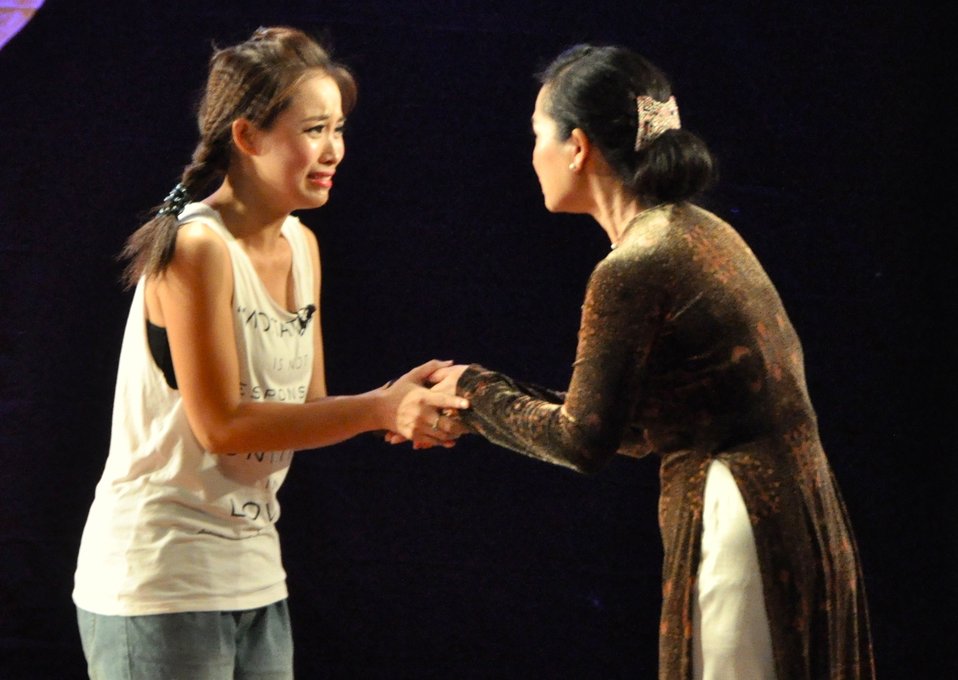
PEPFAR Musical Questions and Exclamations

Hanoi, May 17, 2013